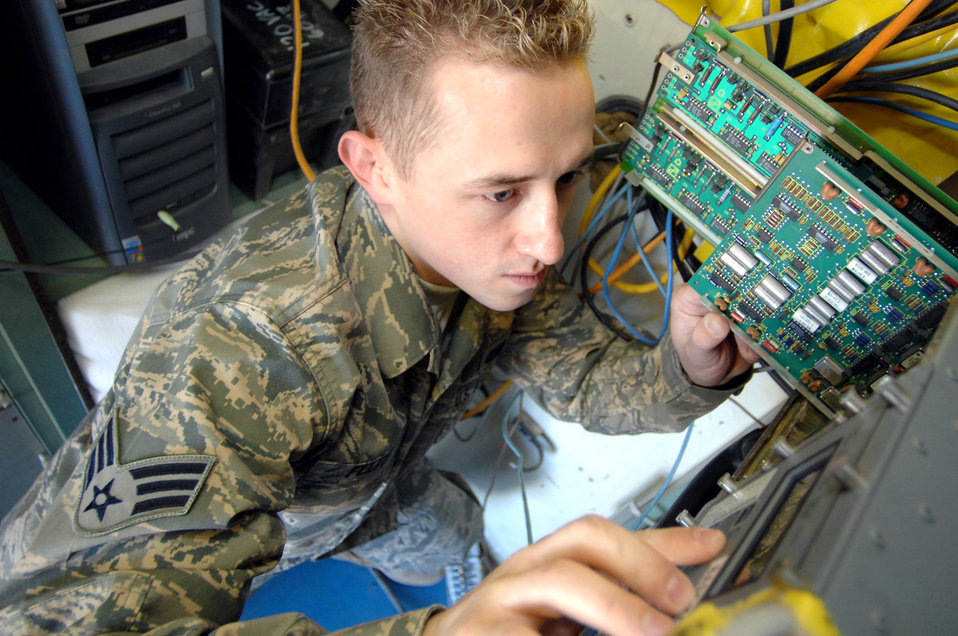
Trouble can't hide

Senior Airman Zachary Felten trouble shoots an FCC-100 Jan. 22 which receives the radar feed air traffic controllers use Balad Air Base, Iraq. Air Control Squadron communications Airmen maintain the systems that monitor combat air space. Airman Felten is a 727th Expeditionary Air Control Squadron tech controller deployed from Eglin Air Force Base, Fla.